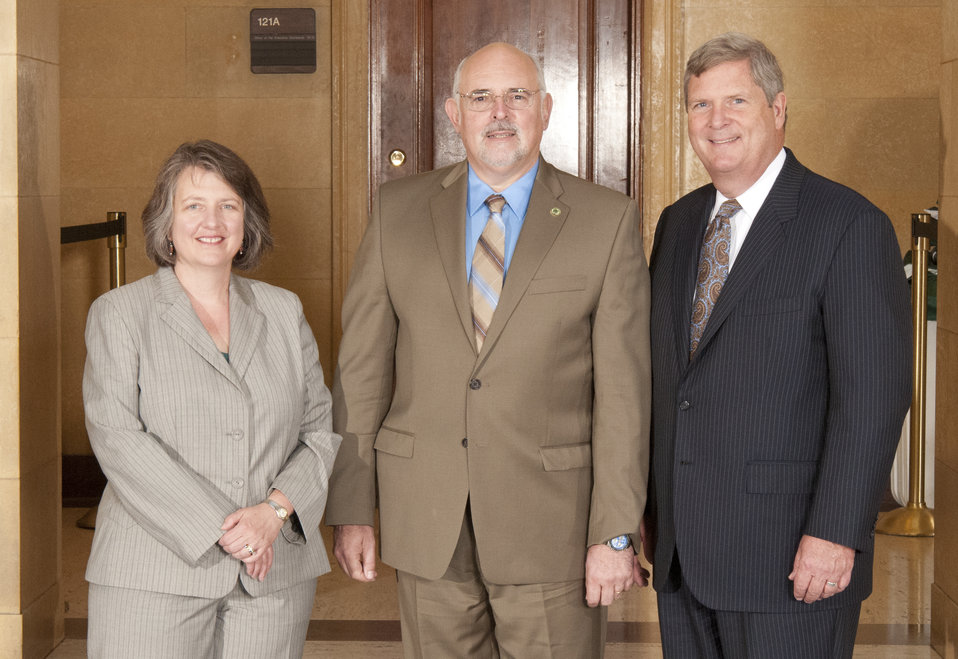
Agriculture Secretary Tom Vilsack and Deputy Agriculture Secretary Kathleen Merrigan with Daniel Manxoni, Agricultural Marketing Service (AMS) during the Honor Award group photography on the patio of the U.S. Department of Agriculture in Washington, D.C. on Wednesday, Sept. 12, 2012.